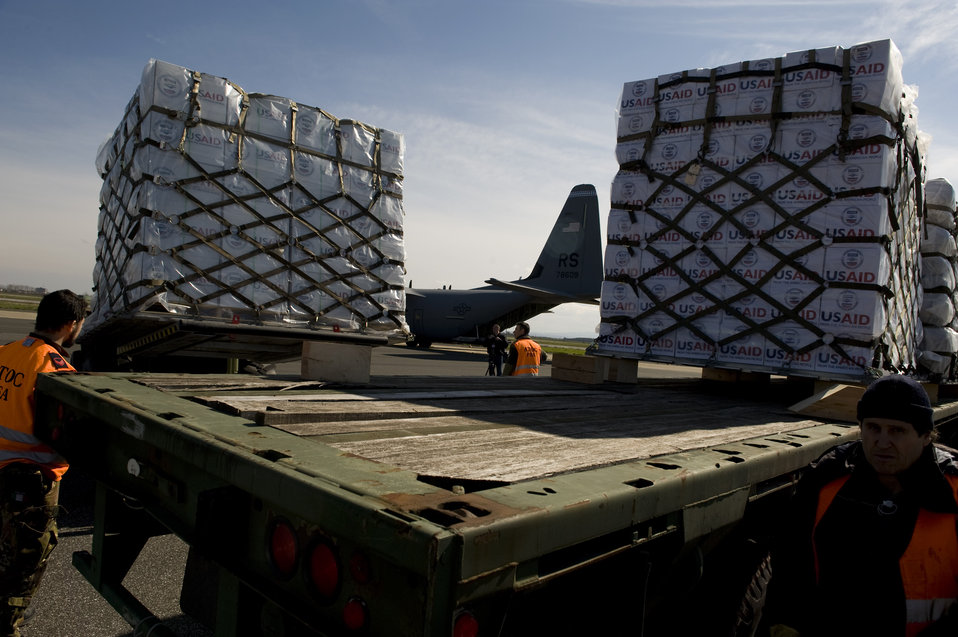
U.S. Airmen Load Blankets, Tarps, and Water Containers Onto Aircraft

U.S. Airmen, from the 435th Air Mobility Squadron out of Ramstein Air Base, load blankets, tarps, and water containers onto C-130 aircraft in Pisa, Italy, on March 4, 2011. These aircraft will then fly these supplies to Tunisia. The U.S. Government is working intensely with the International community to meet the humanitarian needs of the Lybian people and others in the country who fled across the borders. [Staff Sgt. Brendan Stephens photo/ U.S. Army photo]